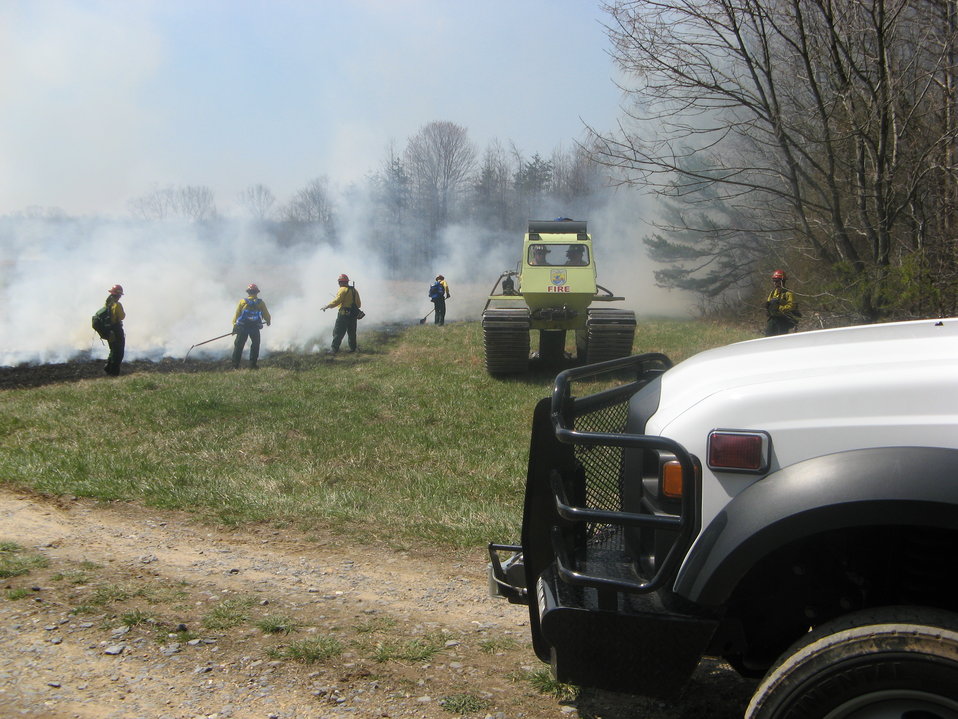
Firefighters and equipment at controlled burn

Laurel, MD: Firefighters hold the line at the perimeter of a controlled burn at Patuxent National Research Refuge.